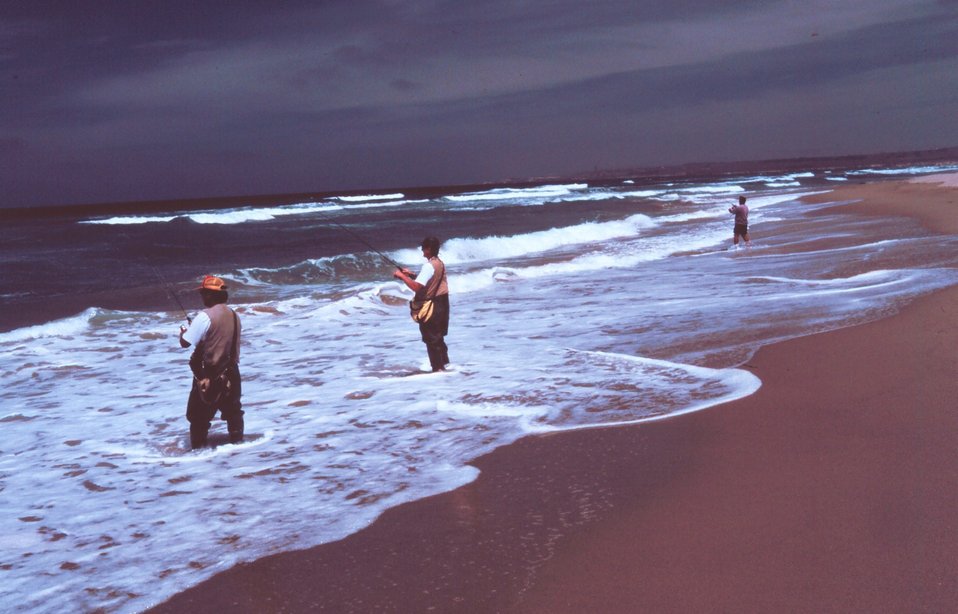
Recreational surf fishermen at Surf